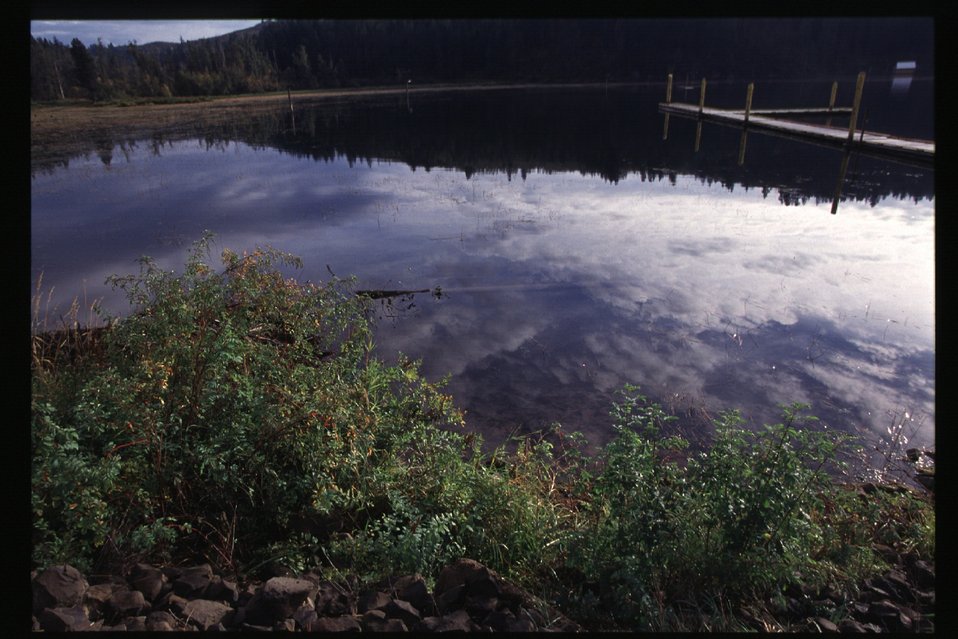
Scenic Mica Bay Couer d'Alene Field Office UCSC Upper Columbia Salmon Clearwater District